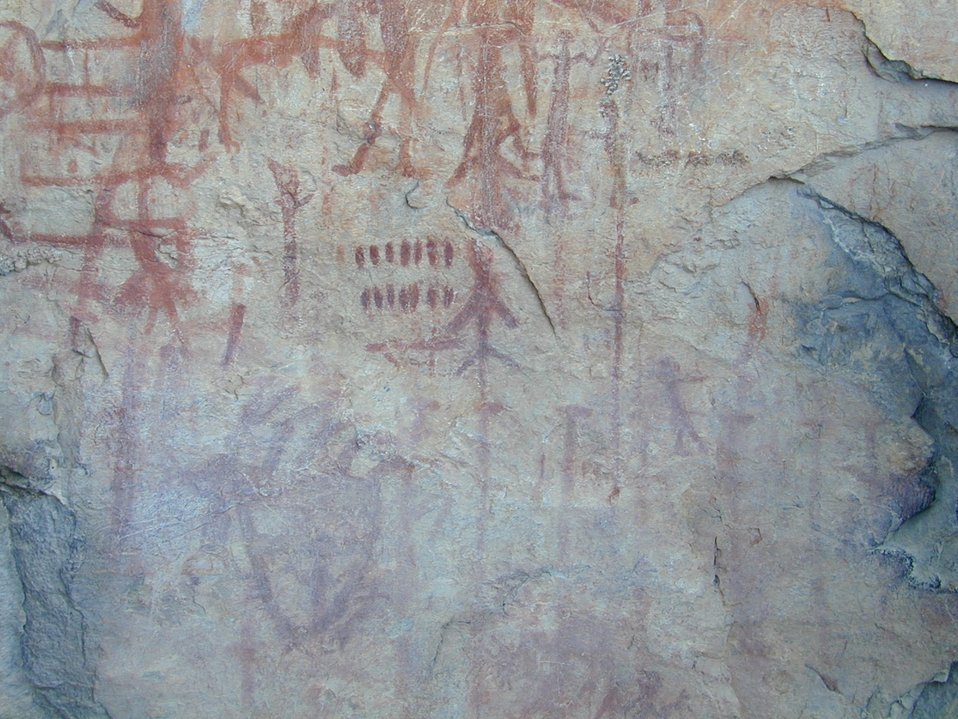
Birch Creek Valley Idaho Falls Field Office USRD Upper Snake River District